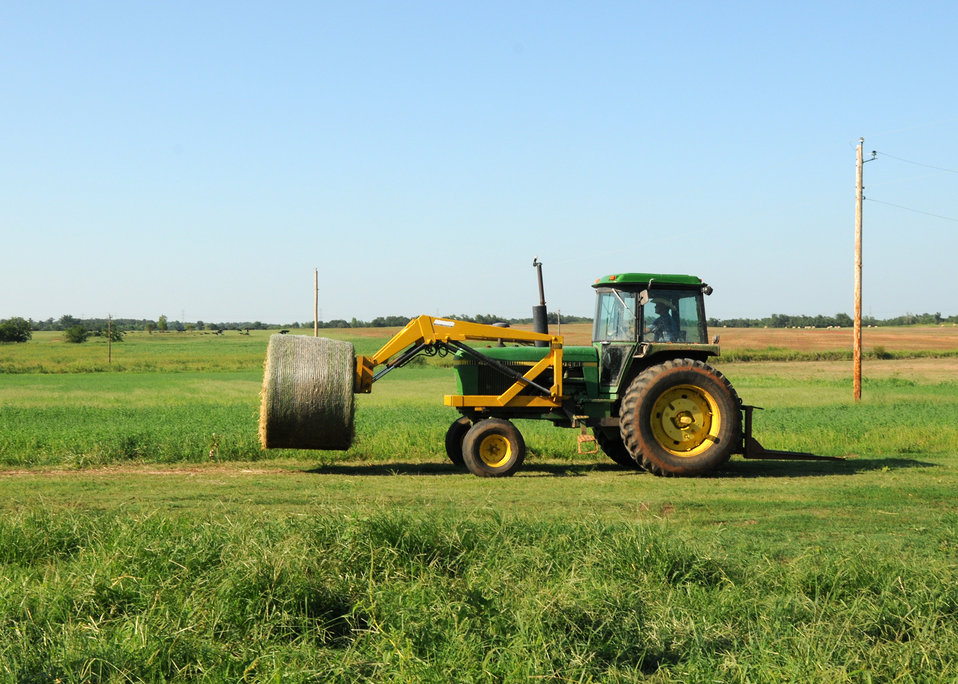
Steve Burris moves hay bales on his farm in McLoud, Oklahoma.